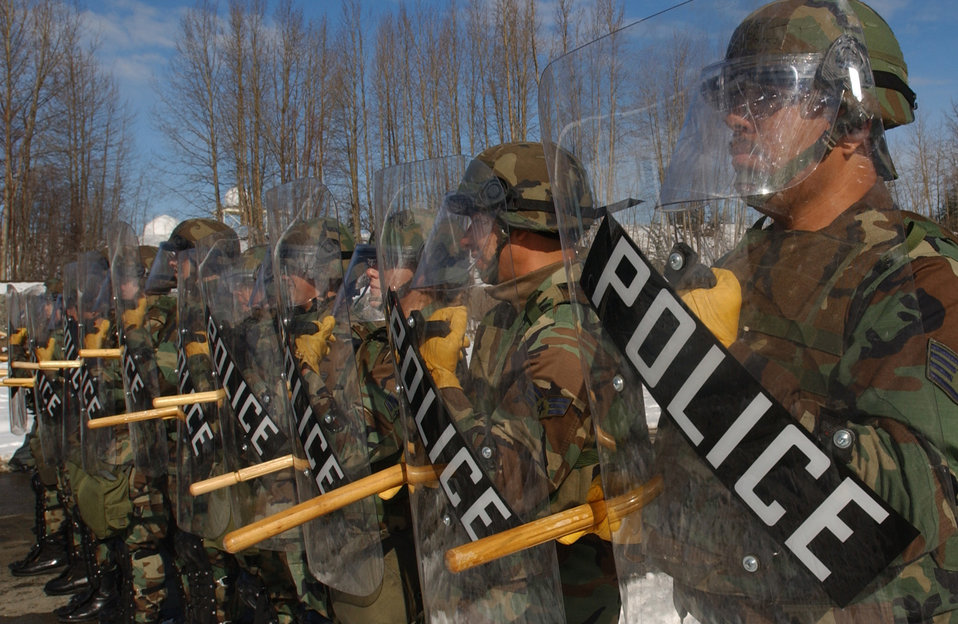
Ready for action

ELMENDORF AIR FORCE BASE, Alaska -- Airmen with the 3rd Security Forces Squadron riot control team line up as they prepare to engage mock war protestors attempting to make there way on base during exercise Polar Force 05-3 here March 31. Exercises like these are conducted on a regular basis to keep Airmen trained for deployments and other real world scenarios.